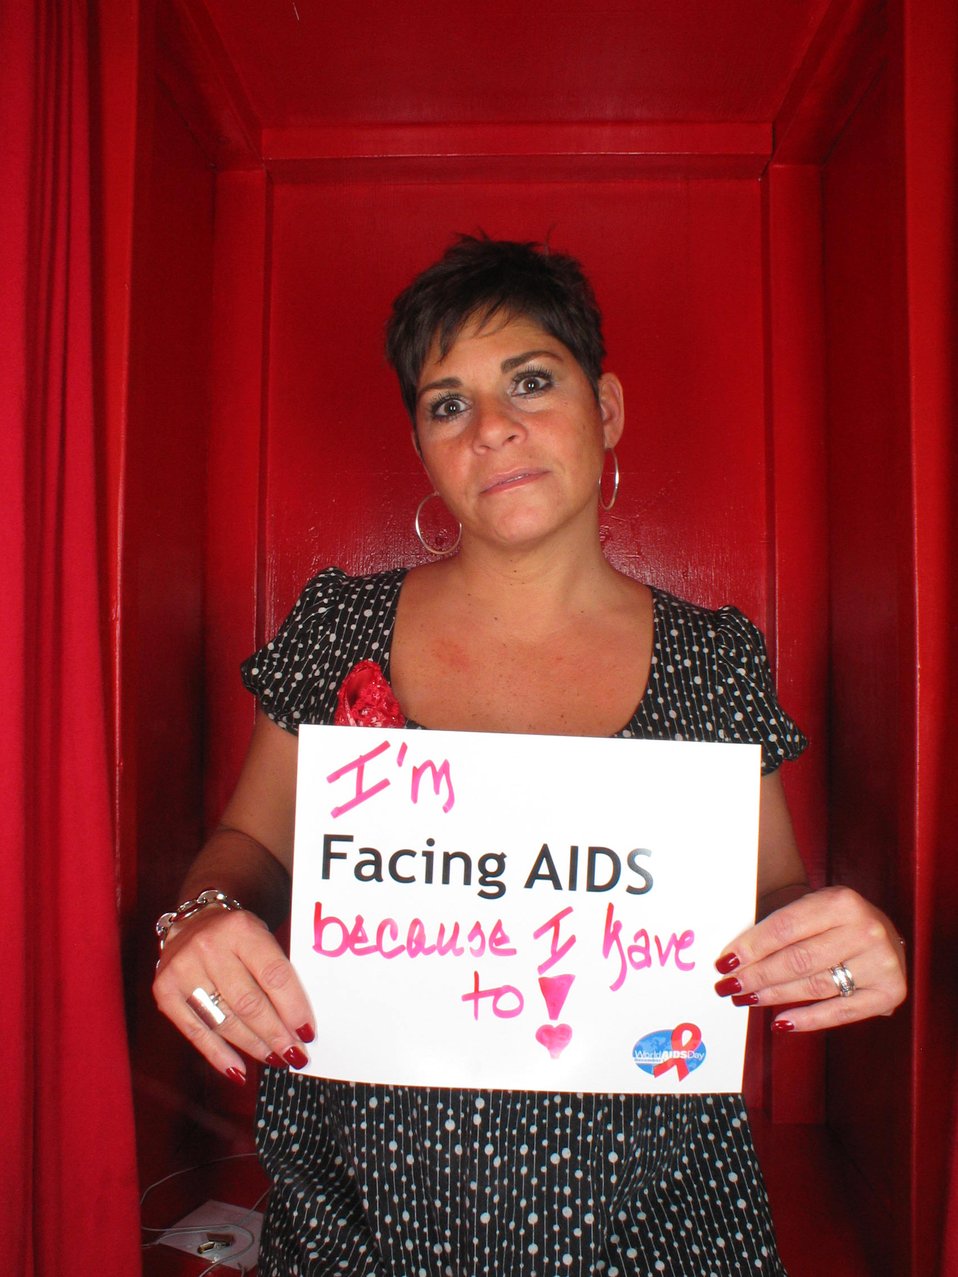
I'm Facing AIDS because I have to!